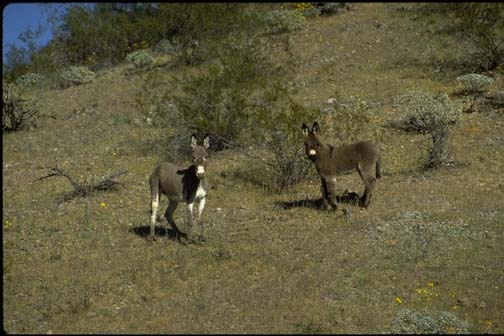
A jenny and foal wild burro south of Bill Williams National Wildlife Refuge.